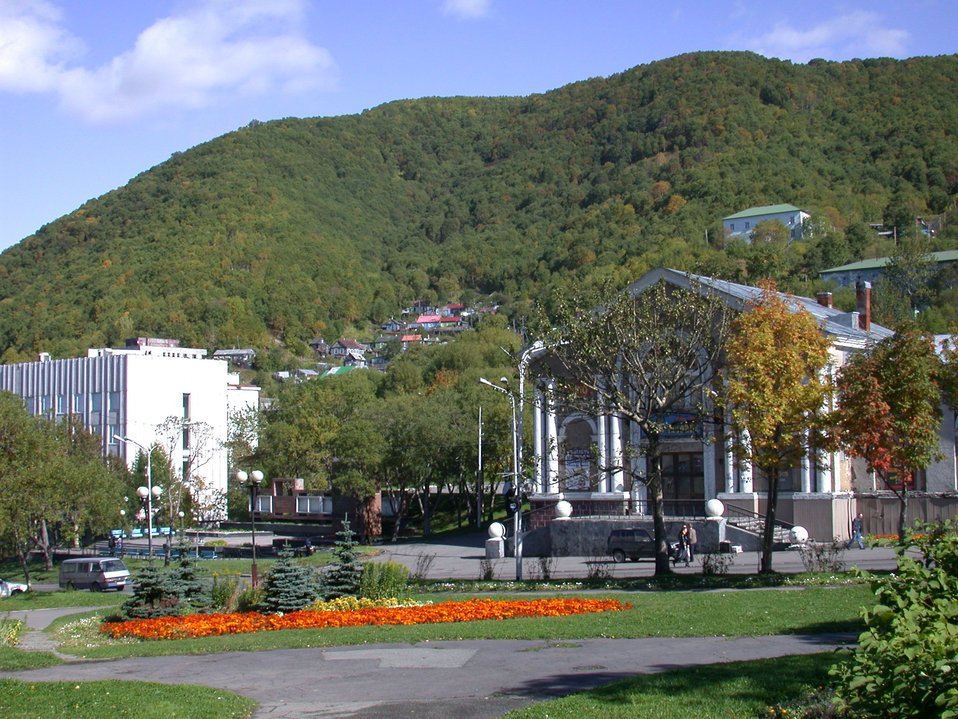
A park scene in Vladivostok.